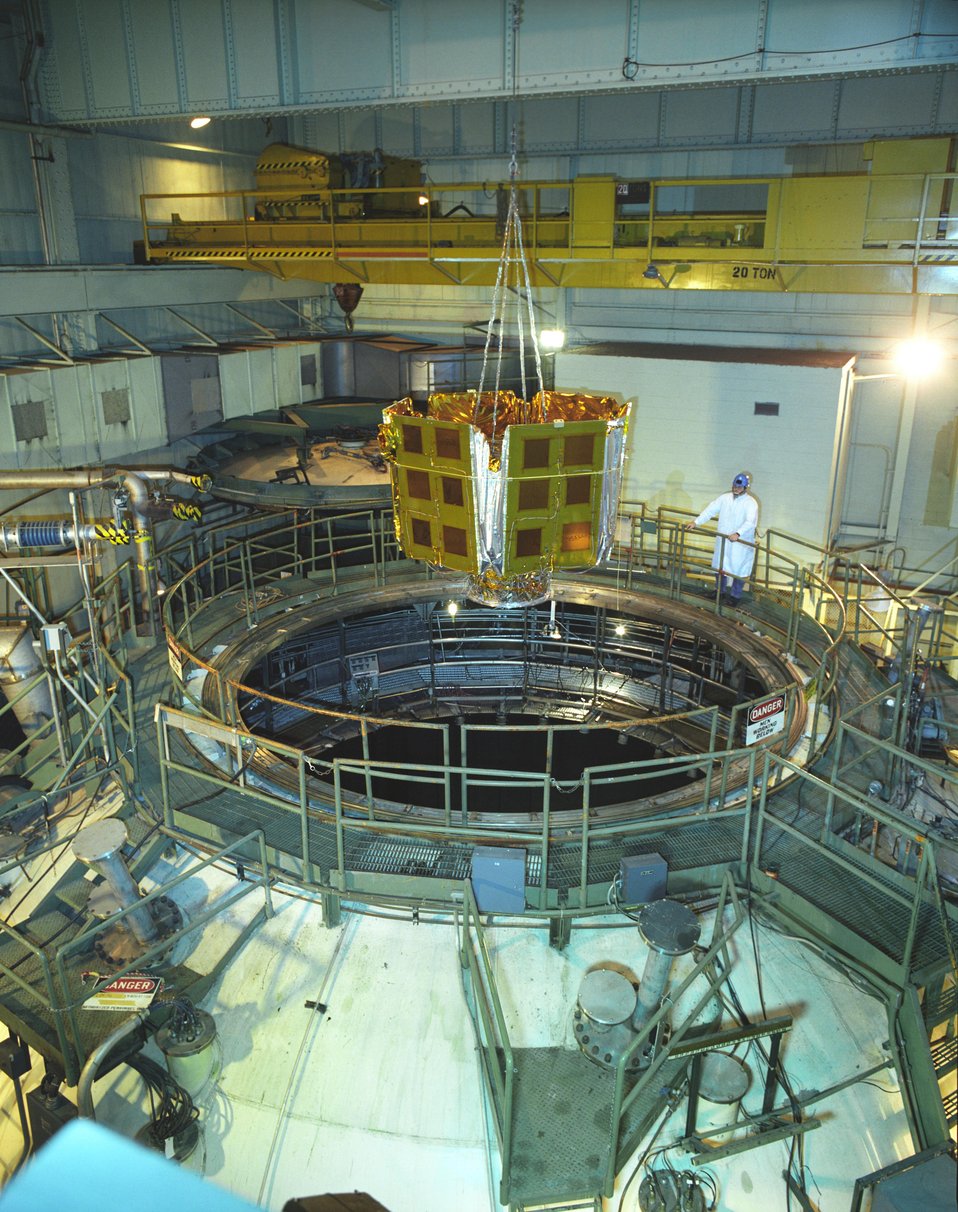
Space Technology

dhffrrhfddrrrrr